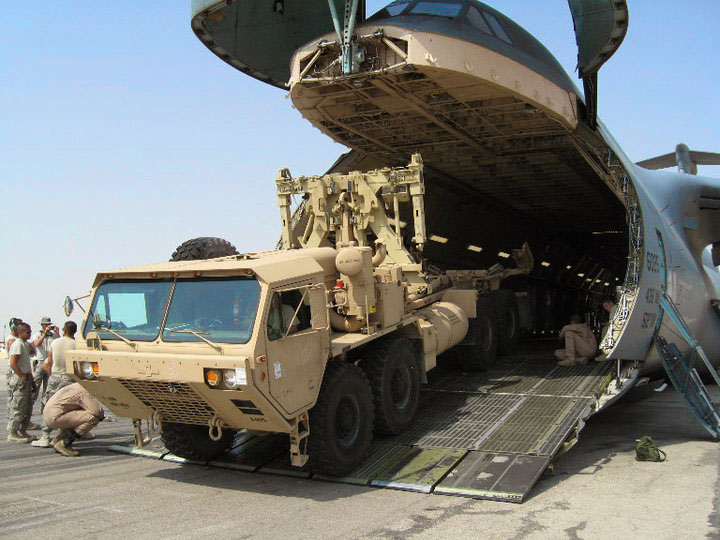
4 million pounds and counting

Supporting President Obama's Afghanistan troop surge, a specialized truck is offloaded from a C-5 Galaxy at an air field in Afghanistan July 12, 2010. Air Force Reserve and active-duty aircrews from Dover Air Force Base, Del., delivered more than 4 million pounds of cargo to various locations in Afghanistan.